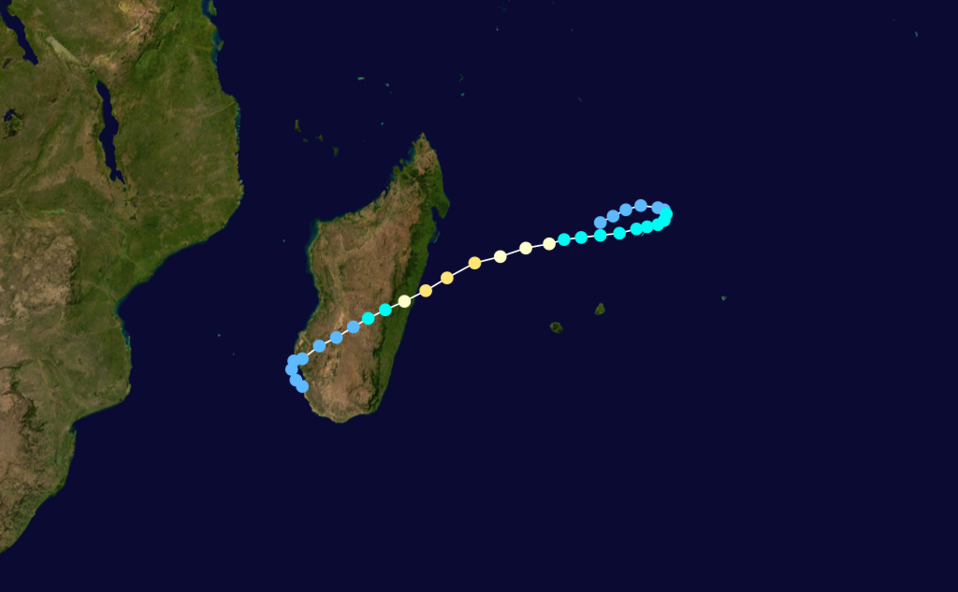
Saffir-Simpson Hurricane Scale TD TS 1 2 3 4 5 Cyclone Daisy (1994) track. Uses the color scheme from the Saffir-Simpson Hurricane Scale.